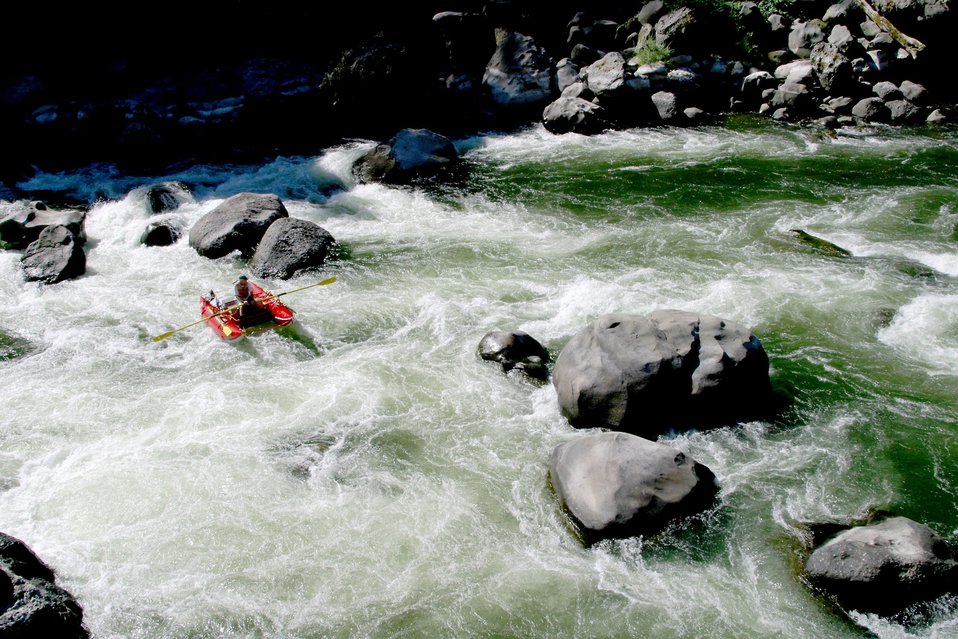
Blossom Rapids.